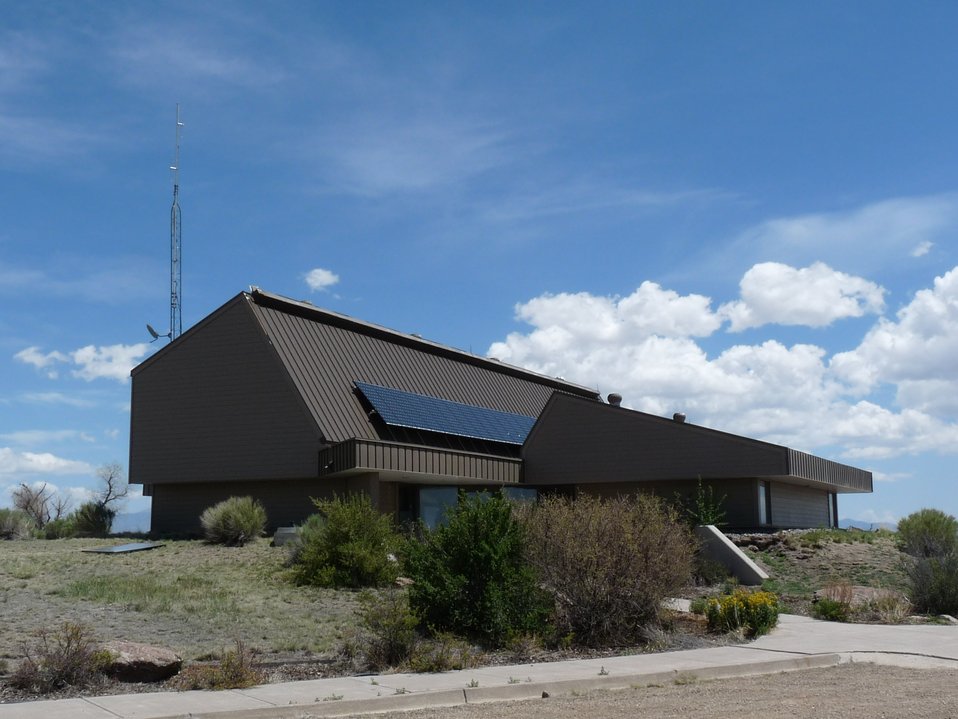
Solar Panels on Alamosa National Wildlife Refuge Visitor Center

Photovoltaic panels on the visitor center at Alamosa National Wildlife Refuge(NWR)in Colorado. Alamosa NWR, with 11,169 acres of wetlands, sits in the Rio Grande River floodplain and is part of the San Luis Valley NWR Complex, along with Monte Vista NWR and Baca NWR. The refuge provides habitat for migratory birds, as well as year-round habitat for wildlife. American Recovery and Reinvestment Act funds were used install photovoltaic panels at all 3 refuges. Alamosa National Wildlife Refuge's existing photovoltaic system was retrofitted for the new visitor center, and the building was rewired to include a new system control panel. The system at Alamosa National Wildlife Refuge produces approximately 6.5KW of electricity on a sunny day.